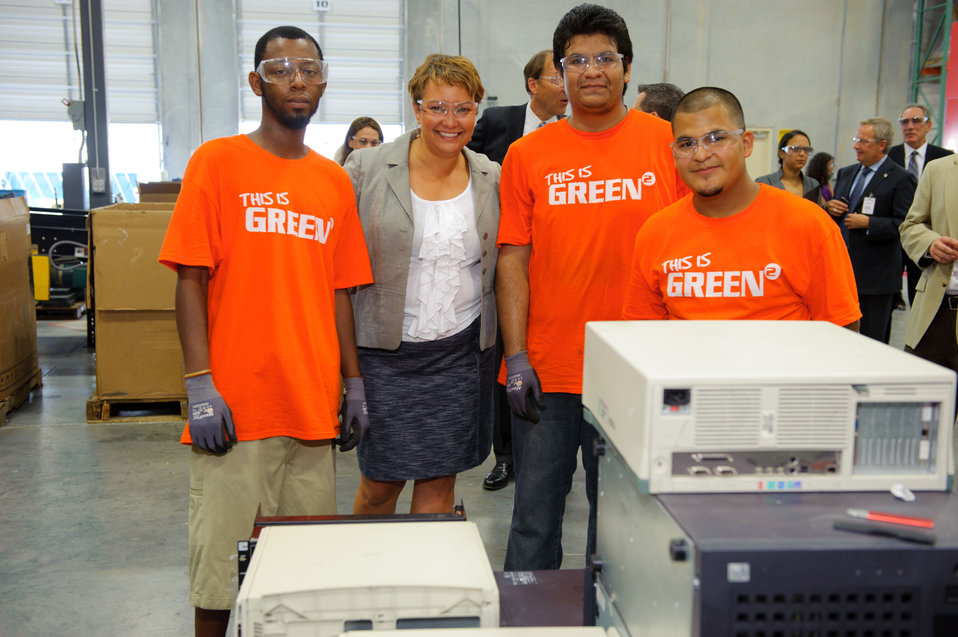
July 20, 2011 - EPA Administrator Lisa Jackson meets workers at the Round2 electronics recycling facility

Administrator Jackson took a tour of Round2 and visited with some of the workers.

To download this image:
1. Right-click the image and under 'View all sizes,' choose 'original'
2. Select the link to 'Download the original size of this photo'